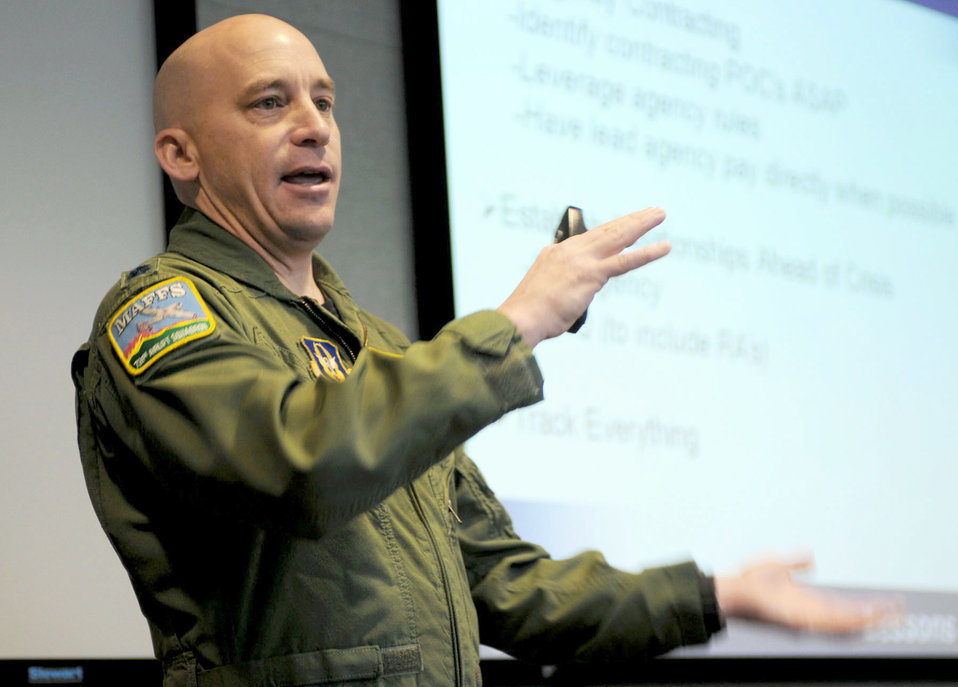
Special Reserve Missions

Lt. Col. David Condit briefs Airmen attending the first Air Force Reserve Command C-130 Special Mission Conference Jan. 12-13, 2011, at Peterson Air Force Base, Colo. The conference was designed to share lessons learned, review policies and procedures, and tackle common support issues involved with the weather reconnaissance, aerial spray and aerial firefighting missions. Colonel Condit is the 302nd Airlift Wing chief of safety and director of the 302nd AW's aerial firefighting program.